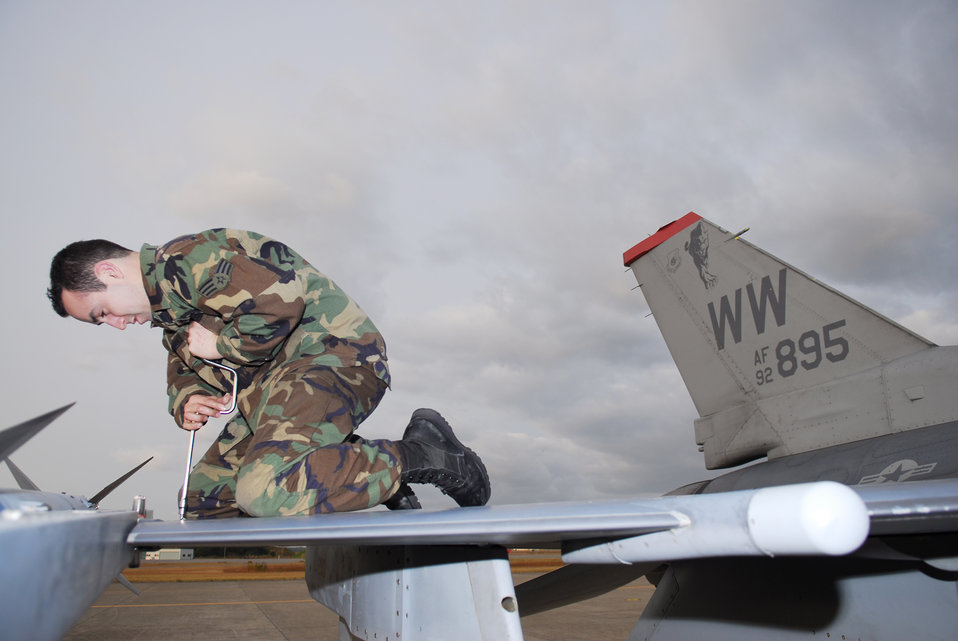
Turn of the screw

Senior Airman Chris Cerrillo, 13th Aircraft Maintenance Unit crew chief, tightens screws on the wing of an F-16 Fighting Falcon, Nov. 16, 2009, at Komatsu Air Base, Japan.